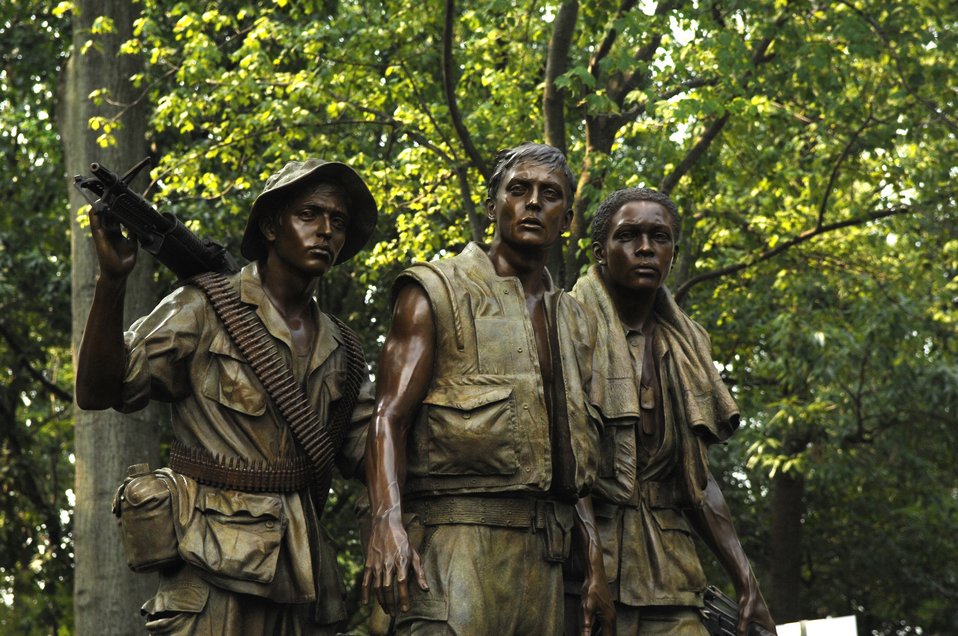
Restoration complete for Vietnam War Memorial statue

After six weeks of restoration work, the newly restored Three Servicemen Statue was unveiled July 8, 2010, during a rededication ceremony near the Vietnam Veterans War Memorial in Washington, D.C.